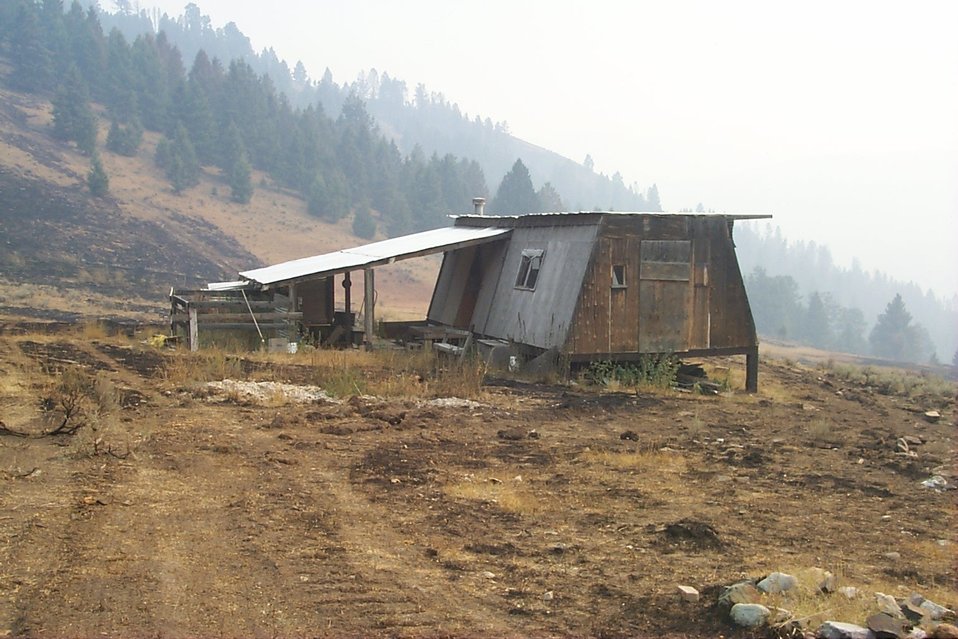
Urban interface Fire Clearwater Fire Salmon Field Office USRD Upper Snake River District